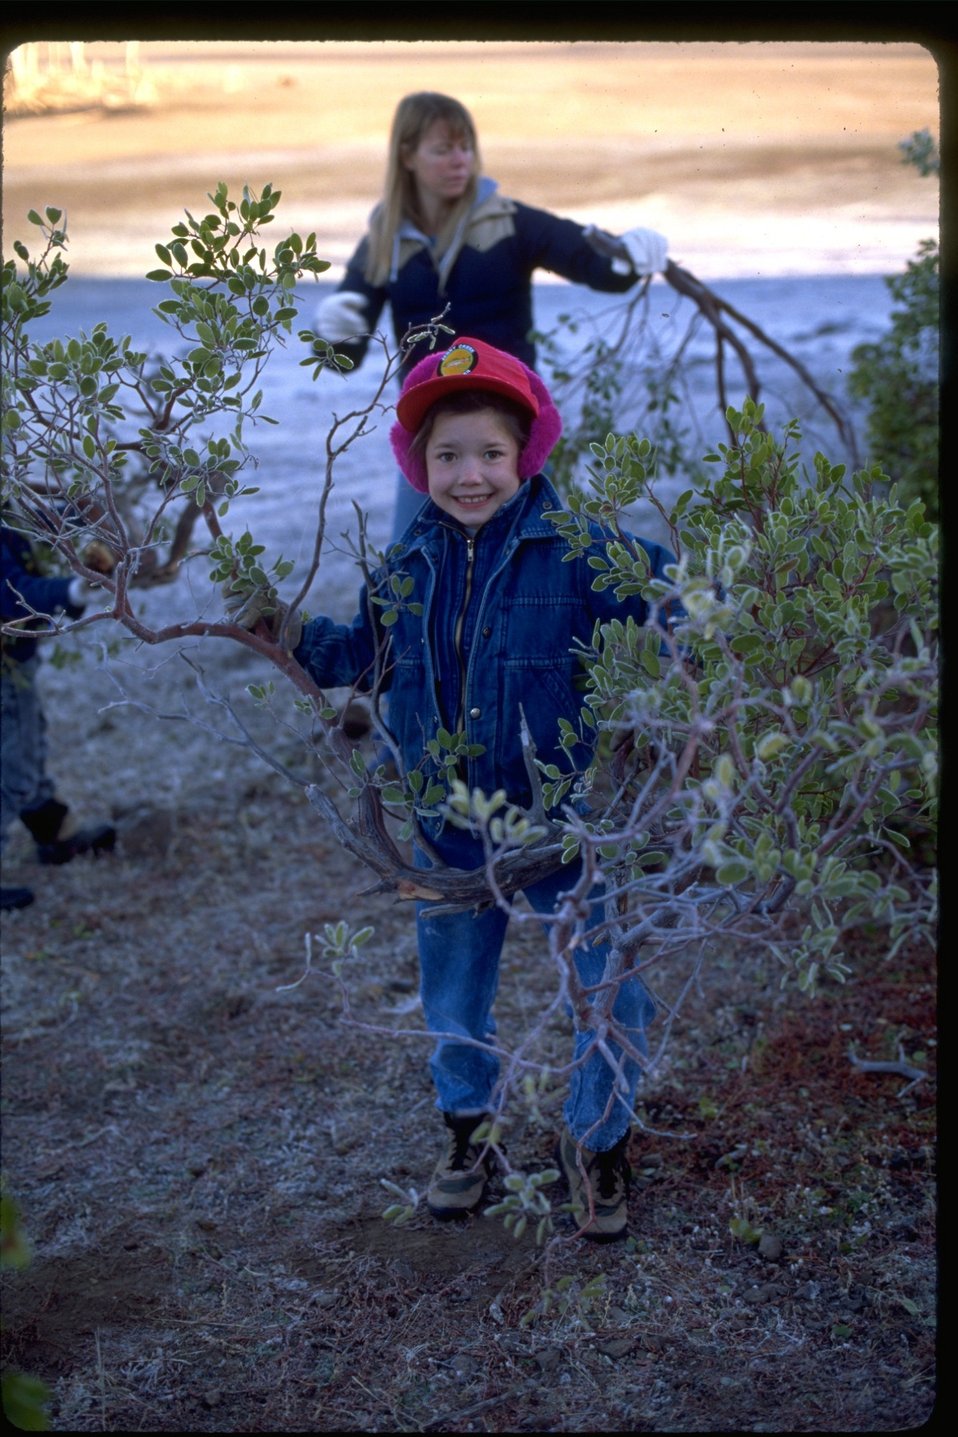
Volunteers on the Jenny Creek project.